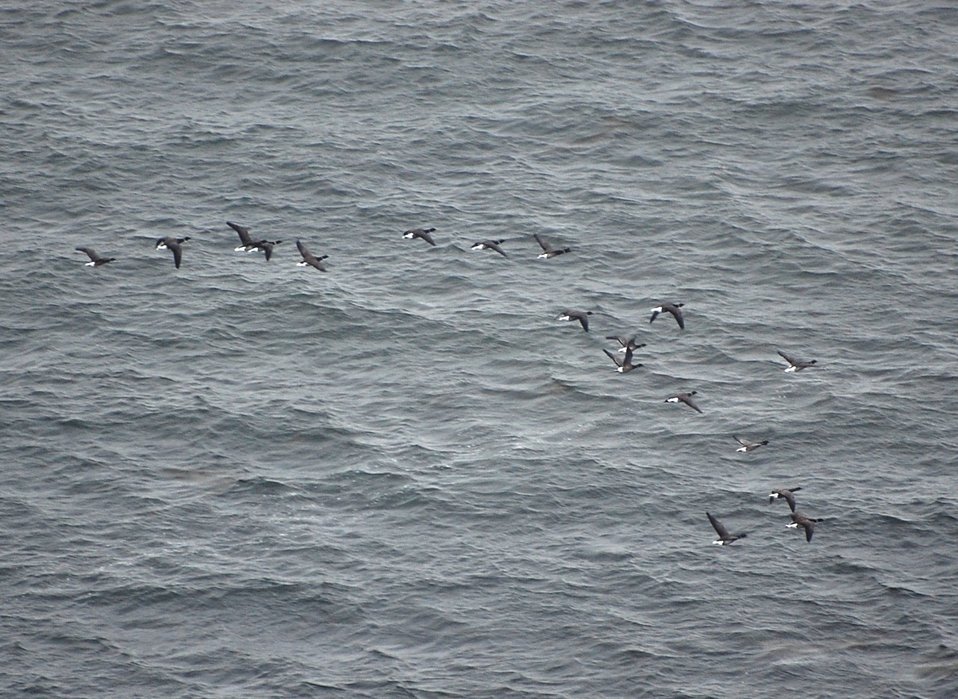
Brant at Izembek Lagoon

Izembek National Wildlife Refuge